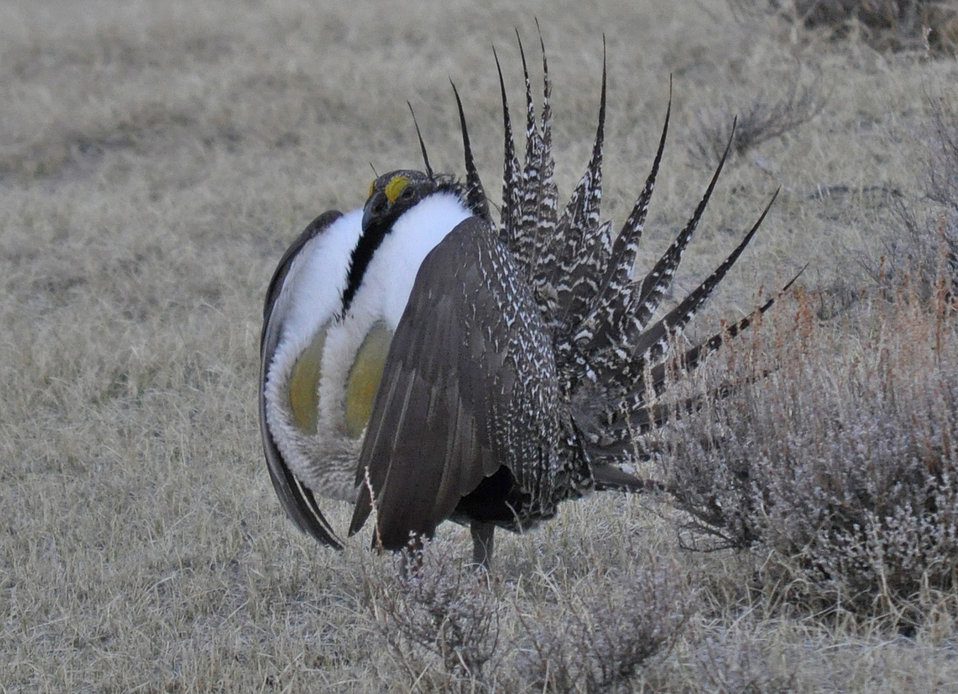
Male greater sage-grouse struts to attract females at a lek (breeding or dancing ground) near Bodie, California in April.